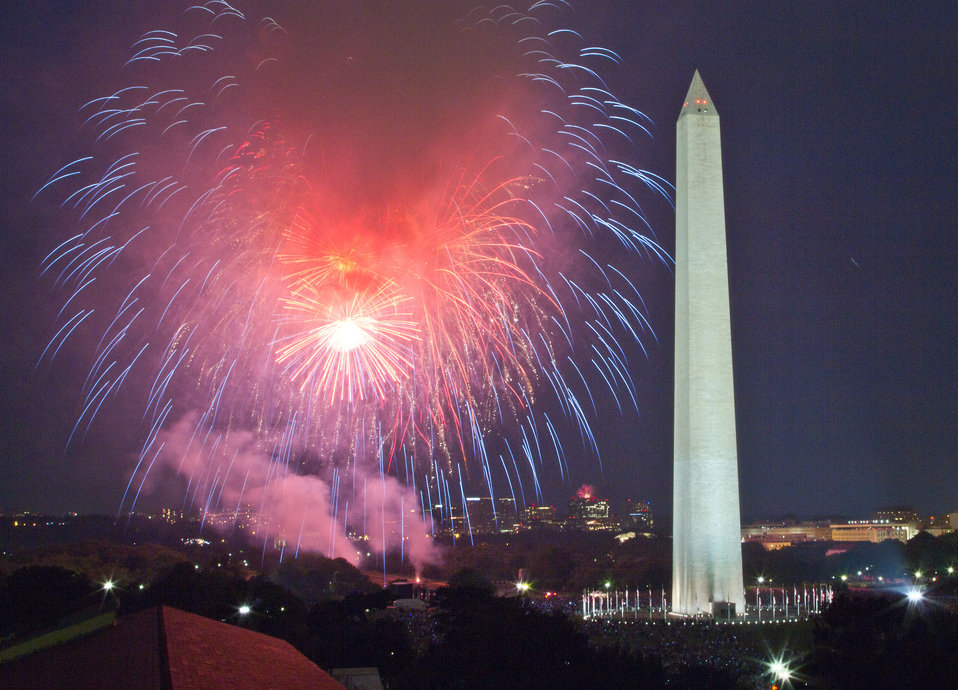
Independence Day fireworks at the National Mall, in Washington, DC, on Monday, July 4, 2011. USDA Media by Lance Cheung.